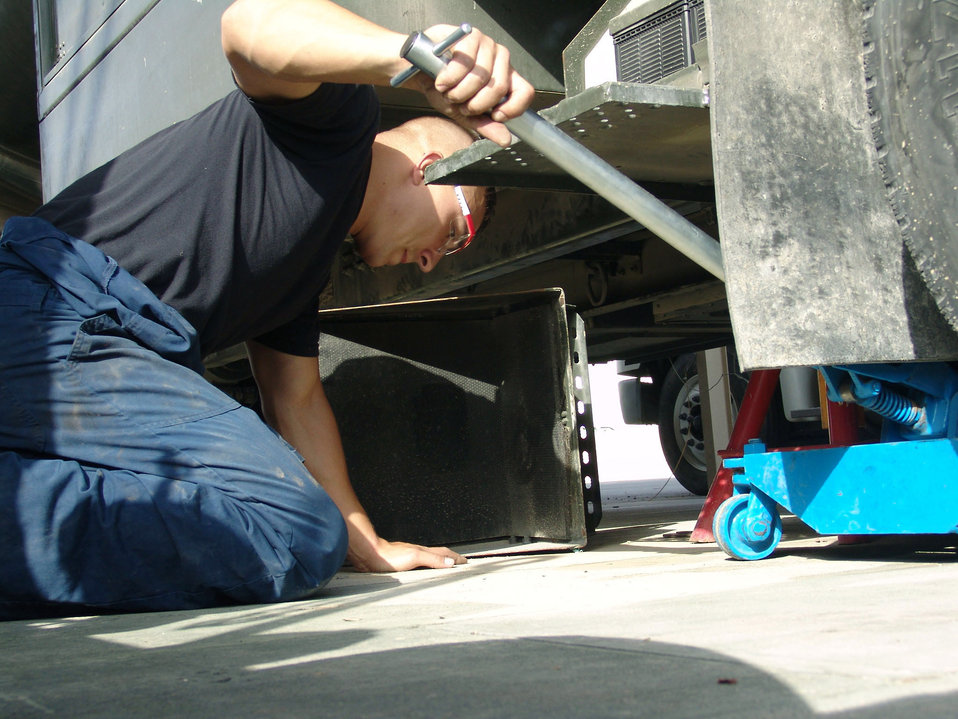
Fix it, fellas

SOUTHWEST ASIA -- Senior Airman Donald Manasco jacks up a refueling truck before installing a new 1,700-pound engine at a forward-deployed location. Airman Manasco and other Airmen of the 386th Expeditionary Logistics Readiness Squadron's vehicle maintenance flight fix an average of nearly 180 vehicles a month.